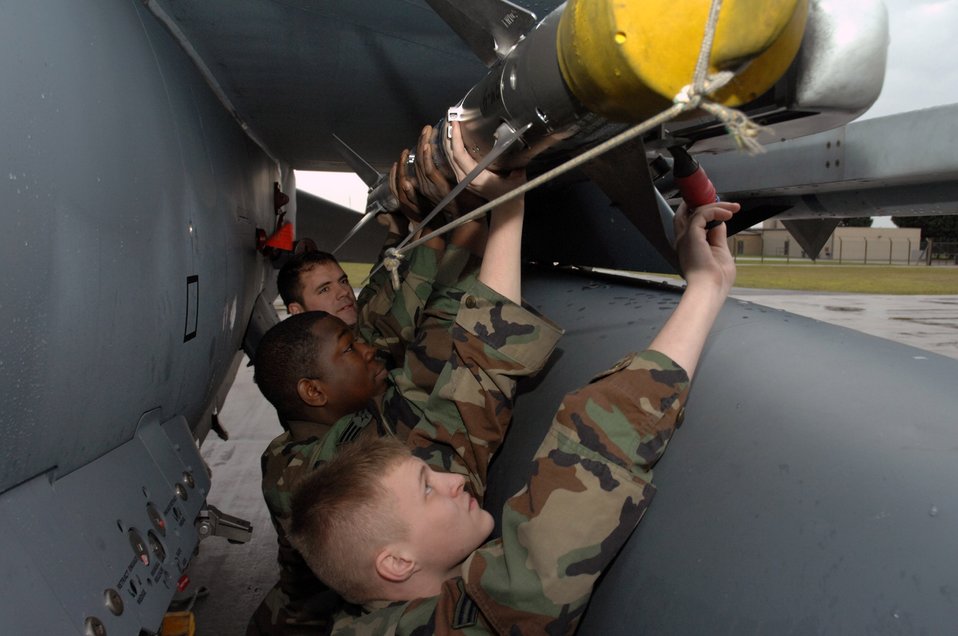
Lakenheath weapons sections merge, improve maintenance

Staff Sgt. Ryan Bloom, Senior Airman Jessie Speed and Airman 1st Class Kevin Hoffnagle load a CAP-9 missile onto an F-15E Strike Eagle Jan. 17at Royal Air Force Lakenheath, England. The Airmen are assigned to the 48th Aircraft Maintenance Squadron